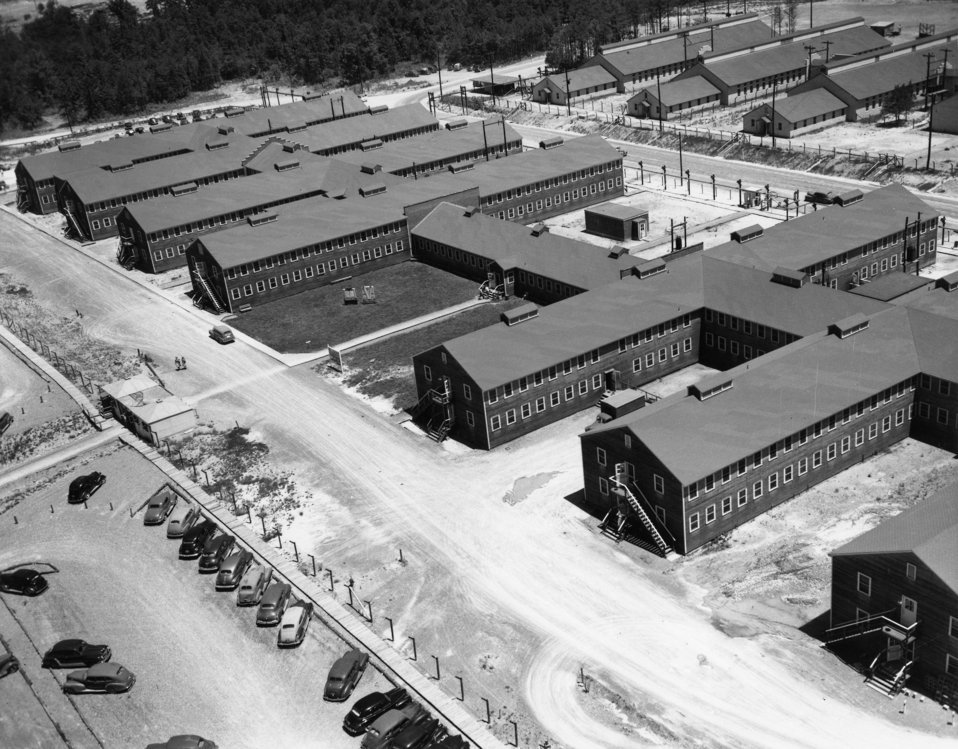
Aerial of Oak Ridge